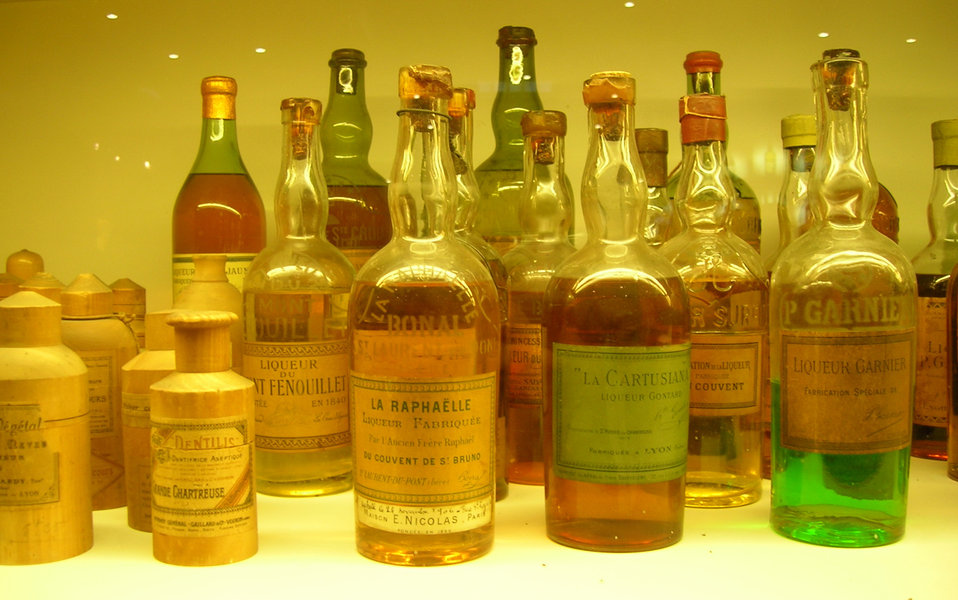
Counterfeits of Chartreuse liquors, exhibited in the museum of the Chartreuse cellars in Voiron (Is√®re, France).
Fran√ßais†: Contrefa√ßons de liqueur de Chartreuse, expos√©es dans le mus√©e des Caves de la Chartreuse √† Voiron (Is√®re, France).